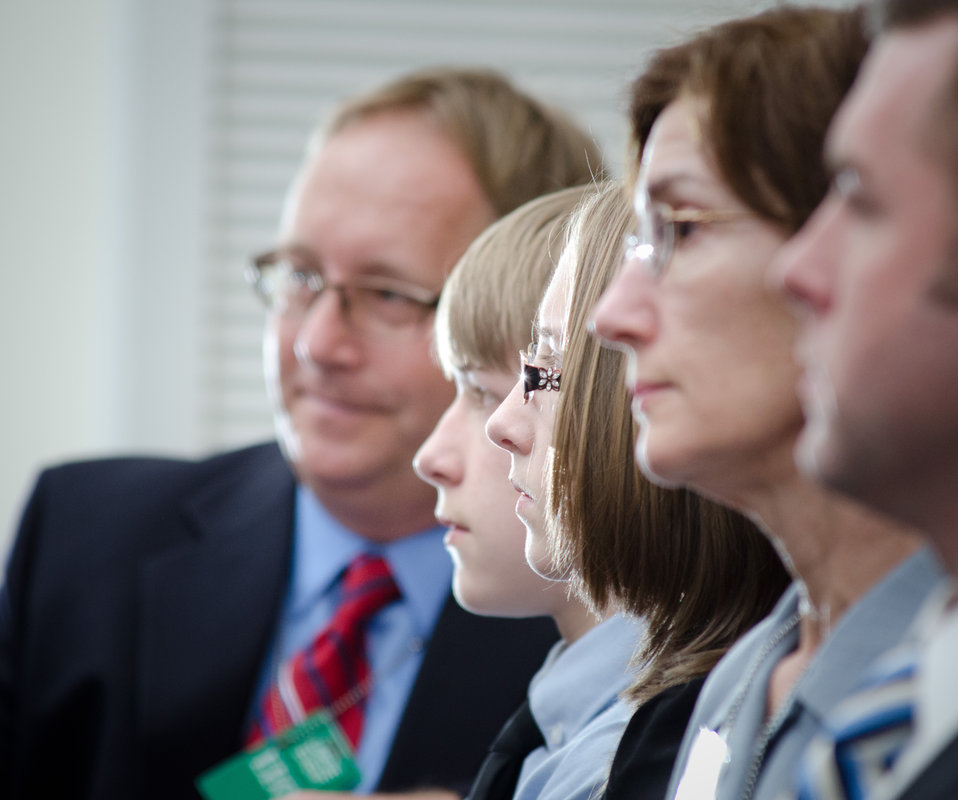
From left to right ,West Virginia farmer and National Farm To School Network Executive Board Member David W. Marvel, Jr., son David Marvel, III., and daughter Bethany Marvel listen to Agriculture Deputy Secretary Kathleen Merrigan talk, during a Know Your Farmer COMPASS twitter event at the White House, in Washington, D.C., on Monday, March 5, 2012. David W. Marvel, Jr., spoke about the farm to school program in his community and has been active in the Farm to Cafeteria conferences and the National Farm to School efforts. The Know Your Farmer Compass event utilized twitter social media to continue the National Conversation on Local and Regional Food projects and how they offer economic opportunities to local farmers, ranchers and food entrepreneurs.